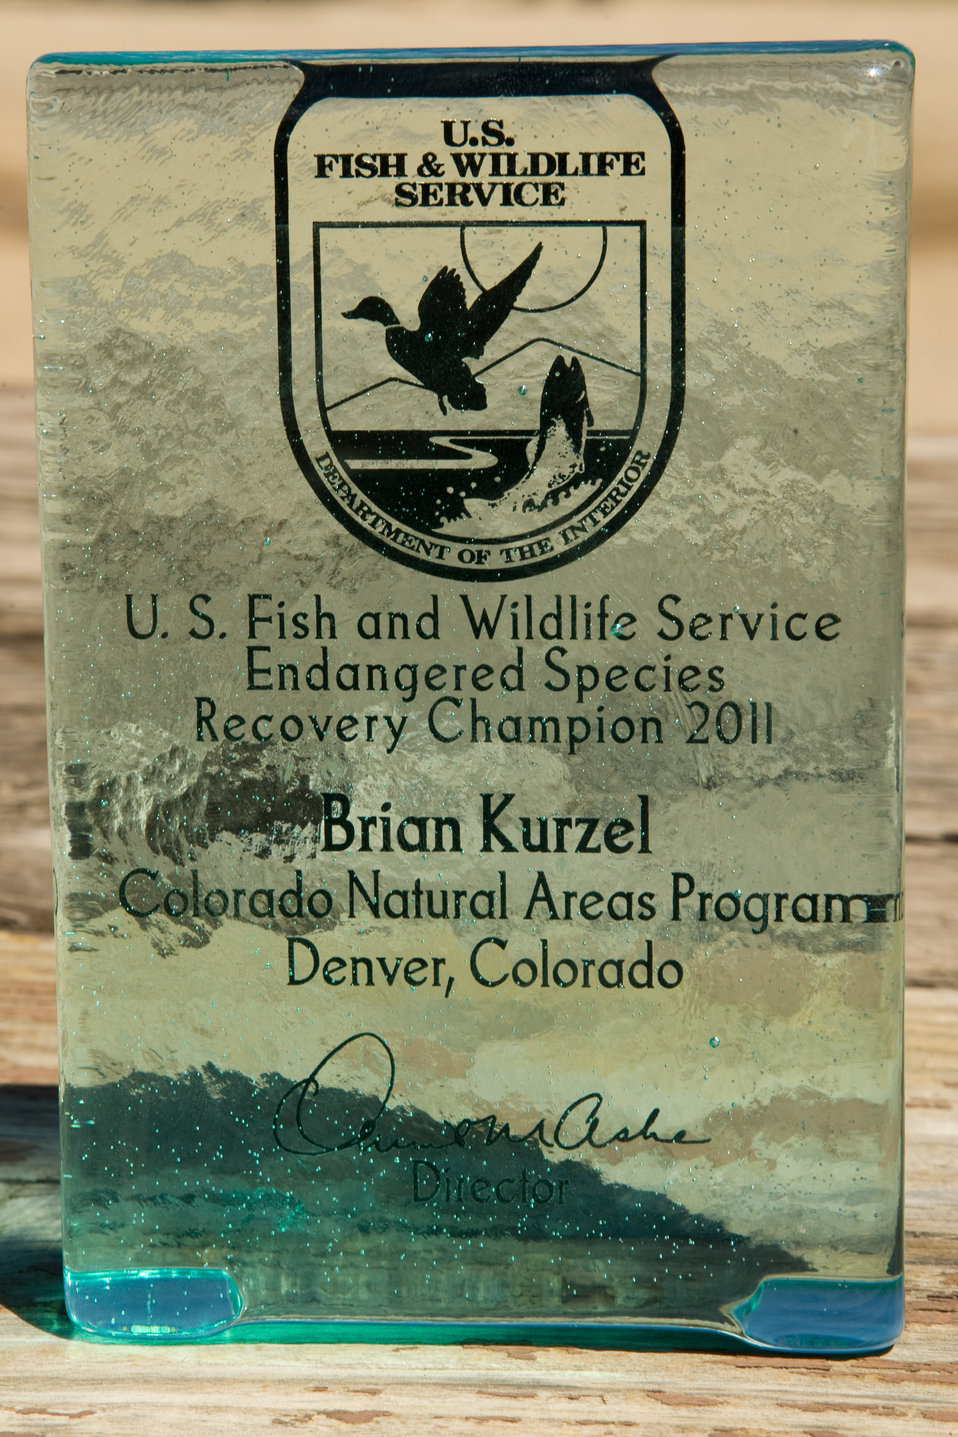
Colorado Rare Plant Conservation Initiative

The Colorado Rare Plant Conservation Initiative (RPCI) is a partnership of 23 statewide and regional agencies, private organizations, and academic institutions working to conserve 121 rare plants in Colorado. As part of these efforts the group developed the Colorado Rare Plant Conservation Strategy, developed Best Management Practices to reduce energy development impacts, addressed climate change, and developed focused strategies for the conservation of individual species at eight priority landscapes. The group has also worked to coordinate volunteer efforts for plant conservation across the state.